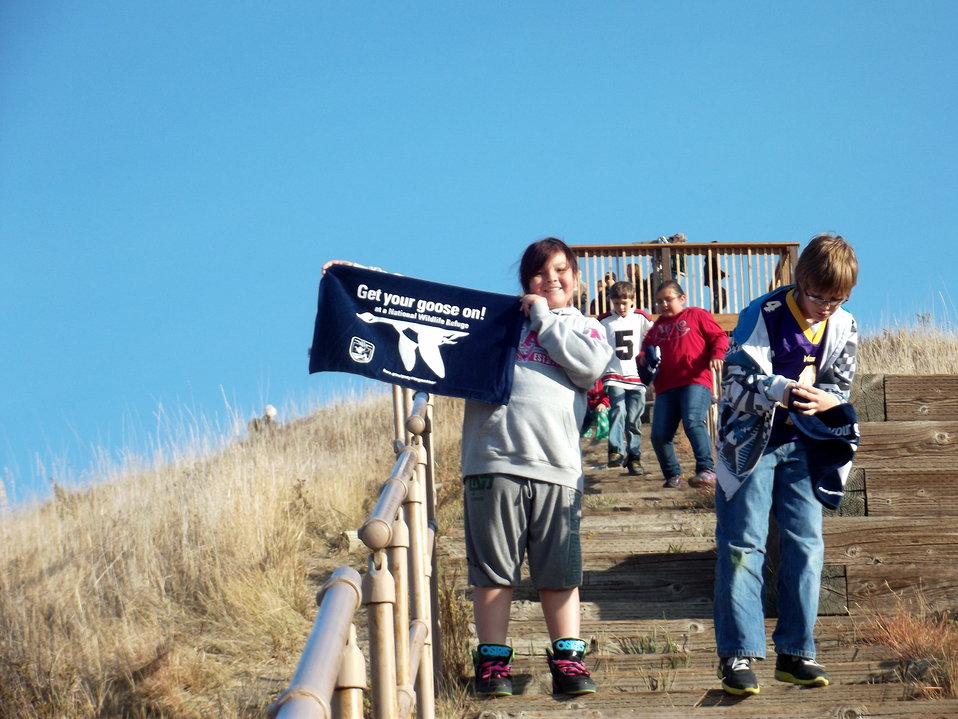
Get Your Goose On!

Photo taken at Sullys Hill National Game Preserve.